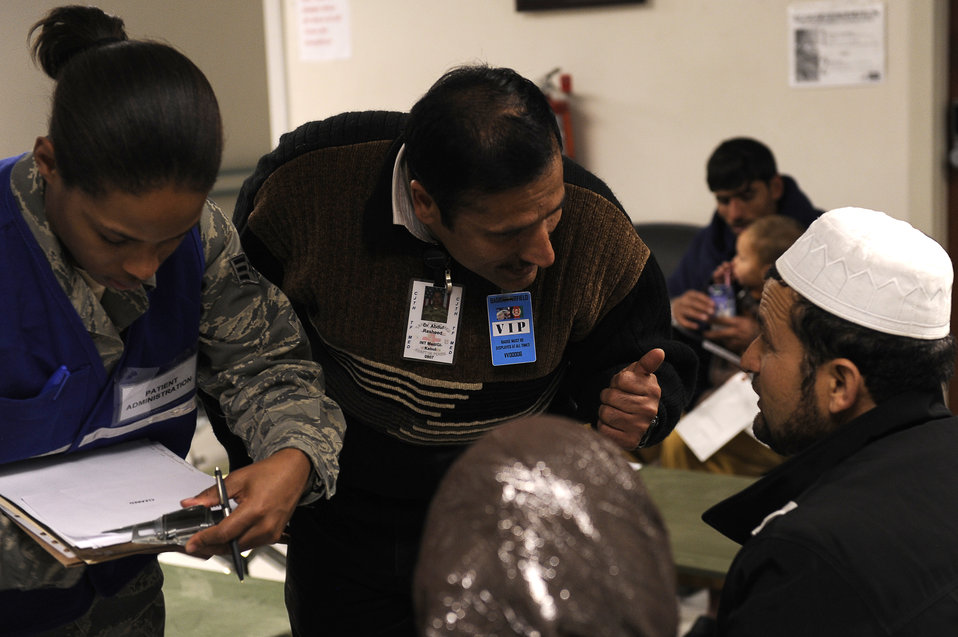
Afghan avalanches

Afghan Dr. Abdul Rasheed and Senior Airmen Katrevious Swift talk with an avalanche survivor Feb. 9, 2010, at Craig Joint Theater Hospital at Bagram Airfield, Afghanistan. Dozens of Afghans were taken to Bagram Airfield after avalanches struck a mountain pass in the Parwan Province. Airman Swift is assigned to the 455th Expeditionary Medical Group,